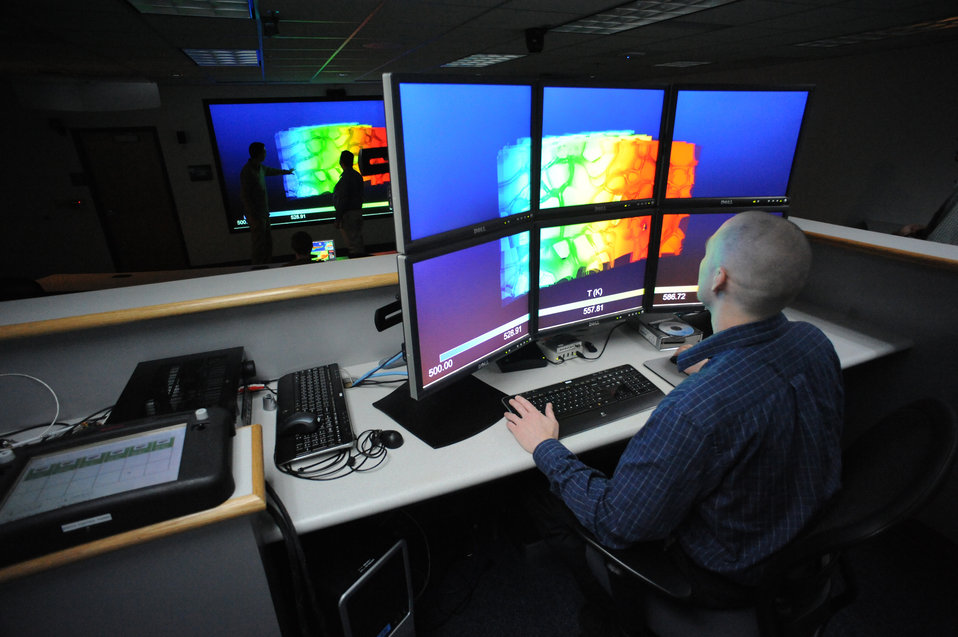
The MARMOT application runs on Idaho National Laboratory's Multiphysics Object Oriented Simulation Environment (MOOSE) simulation platform and models microstructural changes in nuclear fuel during the fission process.